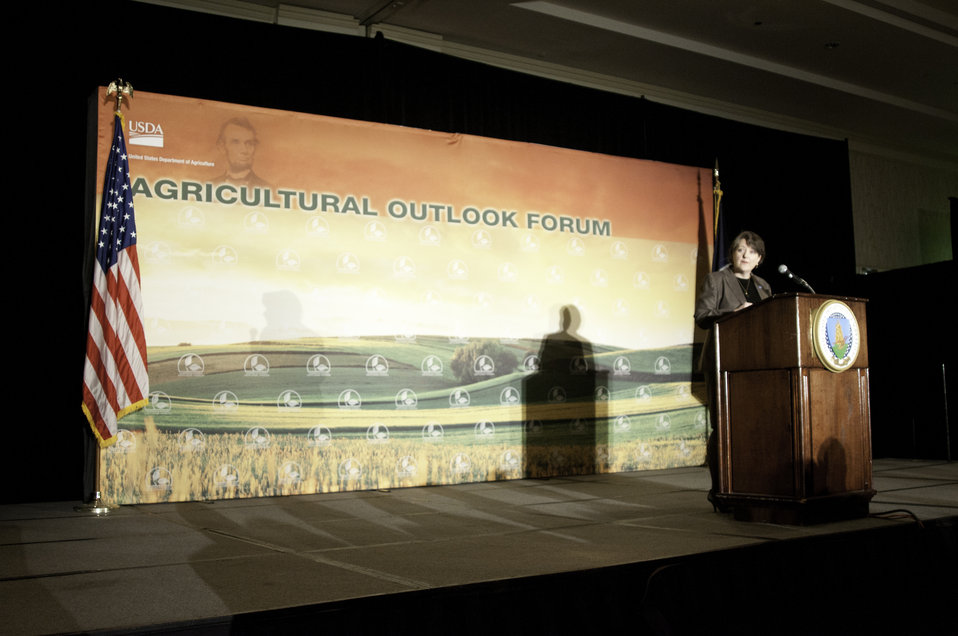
Agriculture Deputy Secretary Kathleen Merrigan makes welcoming remarks at the 2012 Agricultural Outlook Forum, “Moving Agriculture Forward” in Arlington, VA. on Thursday, February 23, 2012.